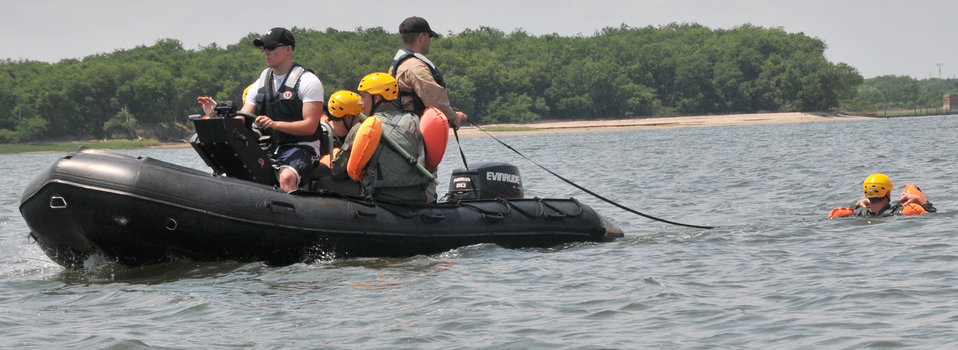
Water survival training course

Airmen from Joint Base Charleston, South Carolina participate in a seven-hour long water survival training course May 2, 2011, at Charleston Harbor, South Carolina.